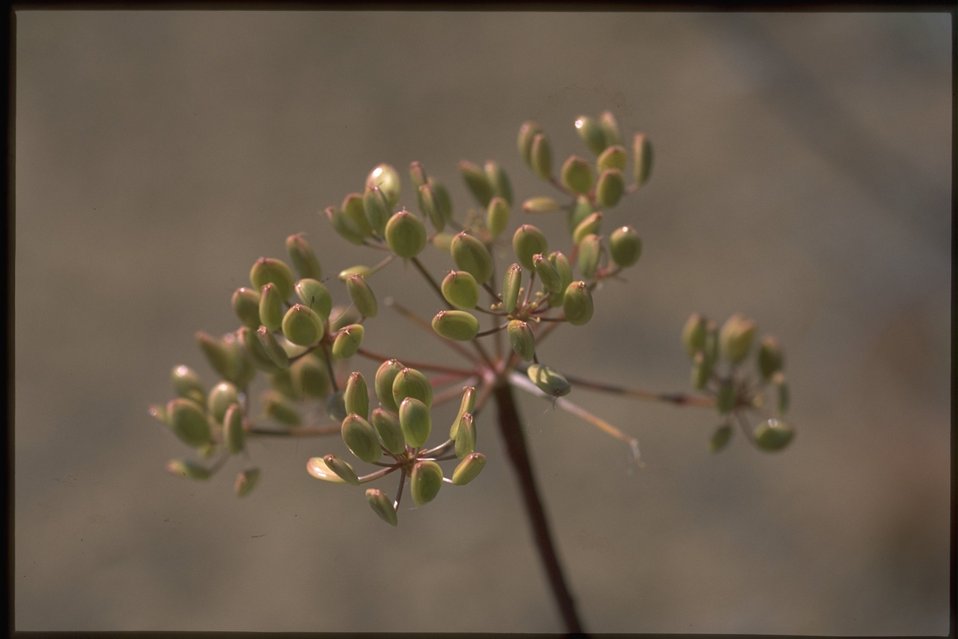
Closeup shot of Apiaceae - Lomatium fruits.